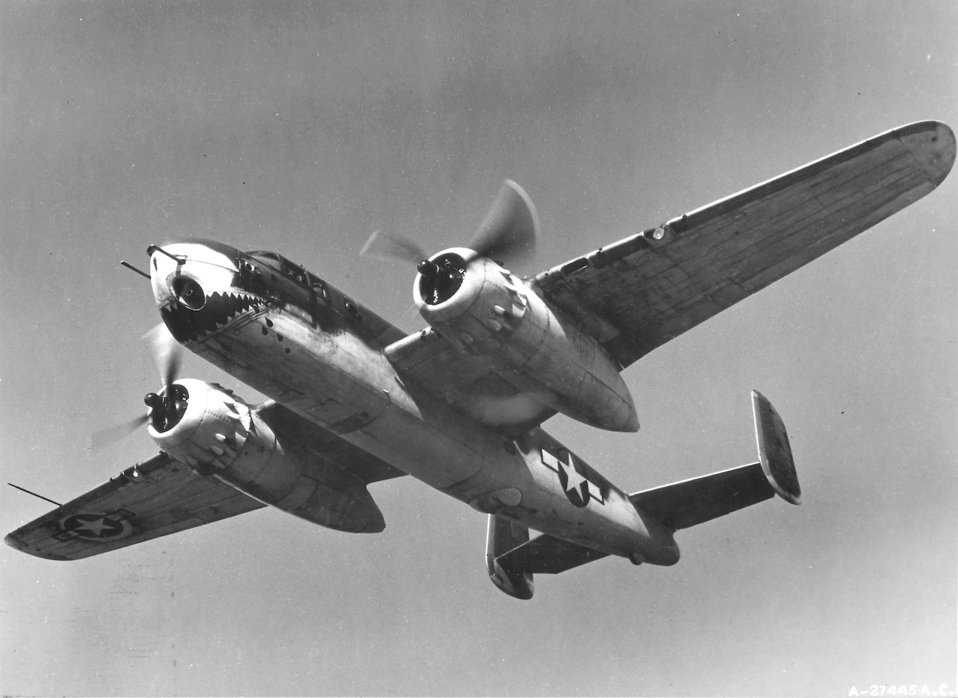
B-25G Mitchell

1940's -- North American's B-25G Mitchell from the AAF TAC Center, Orlando Florida. April 17, 1944. The crew of the B-25G was five--pilot, copilot, navigator/cannoneer, upper turret gunner, and radio operator. Since there was no bombardier, the pilot fired the nose armament and released the bombs. The radio operator also doubled as the ventral turret gunner when this turret was fitted. Additional armor was fitted forward of the instrument panel, forward of the loader's station, around the 75-mm ammunition rack, and below the windshield. An external flak plate was fitted below the cockpit on the left hand side of the aircraft.